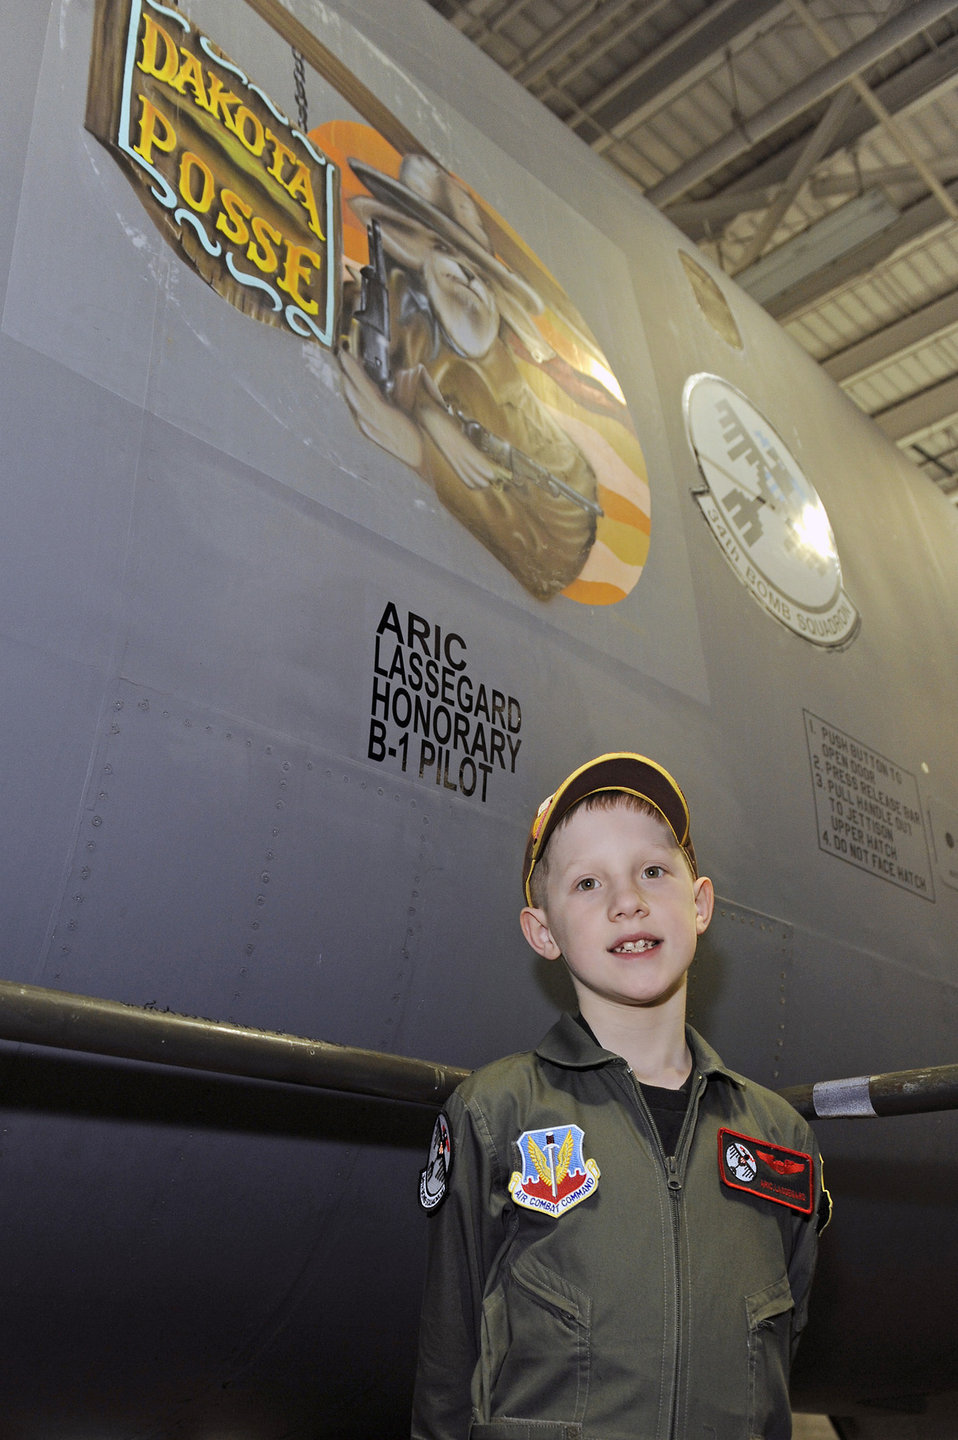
Best day ever

Aric Lassegard stands in front of a B-1B Lancer with his name painted on the nose Jan. 13, 2011, at Ellsworth Air Force Base, S.D. Aric was treated as an honorary member of the 34th Bomb Squadron as part of the Aircrew for a Day program.